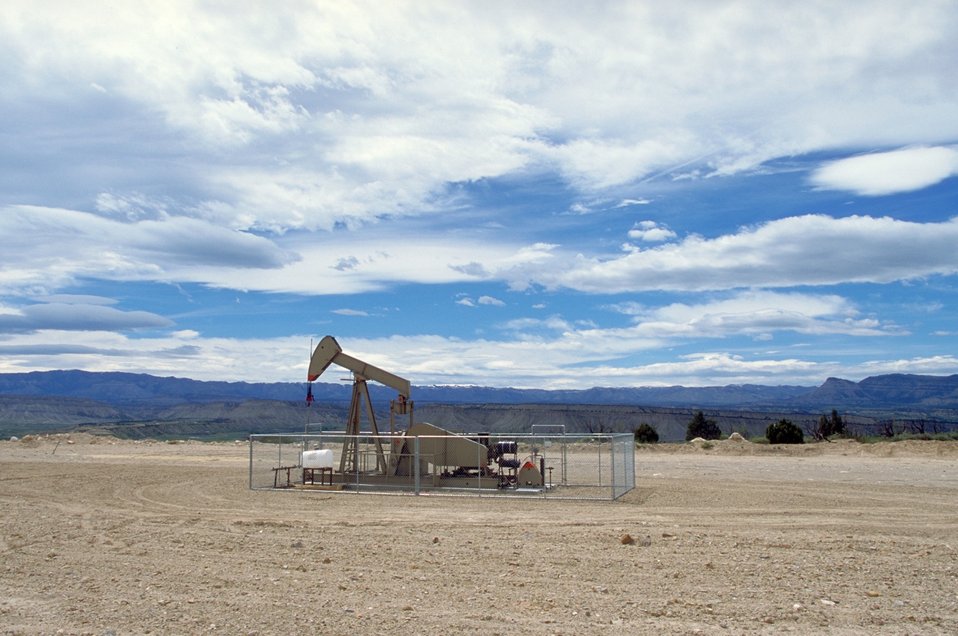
Pump unit producing coal bed methane near Price, Utah.